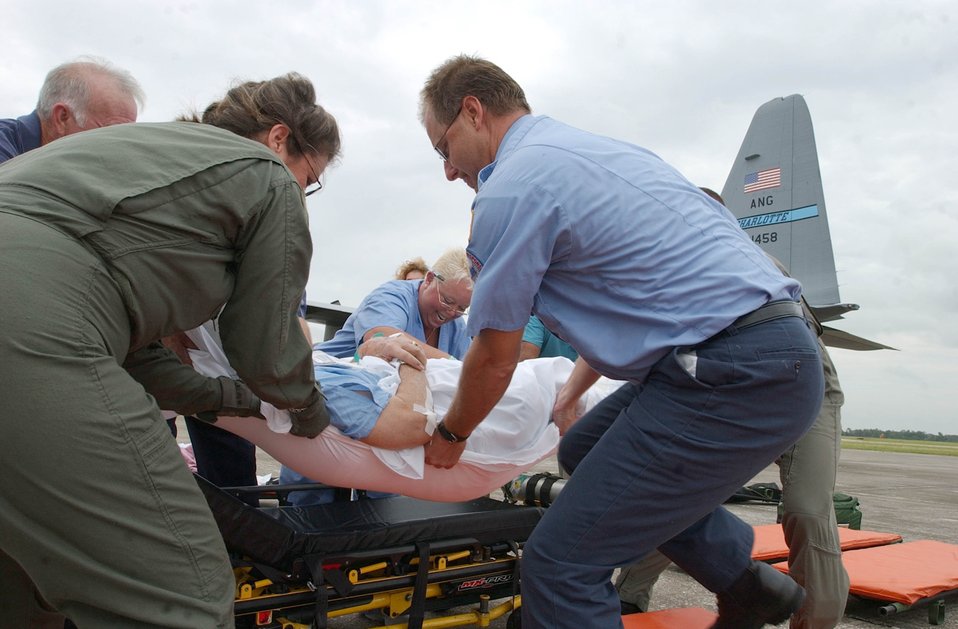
Hurricane Rita Support

SEBRING AIRPORT, Fla. -- Technicians and paramedics from the North Carolina Air National Guard's 156th Aeromedical Evacuation Squadron load patients onto a C-130 here Sept. 23. The C-130 transported more than a dozen elderly Hurricane Rita evacuees back to Key West, Fla.